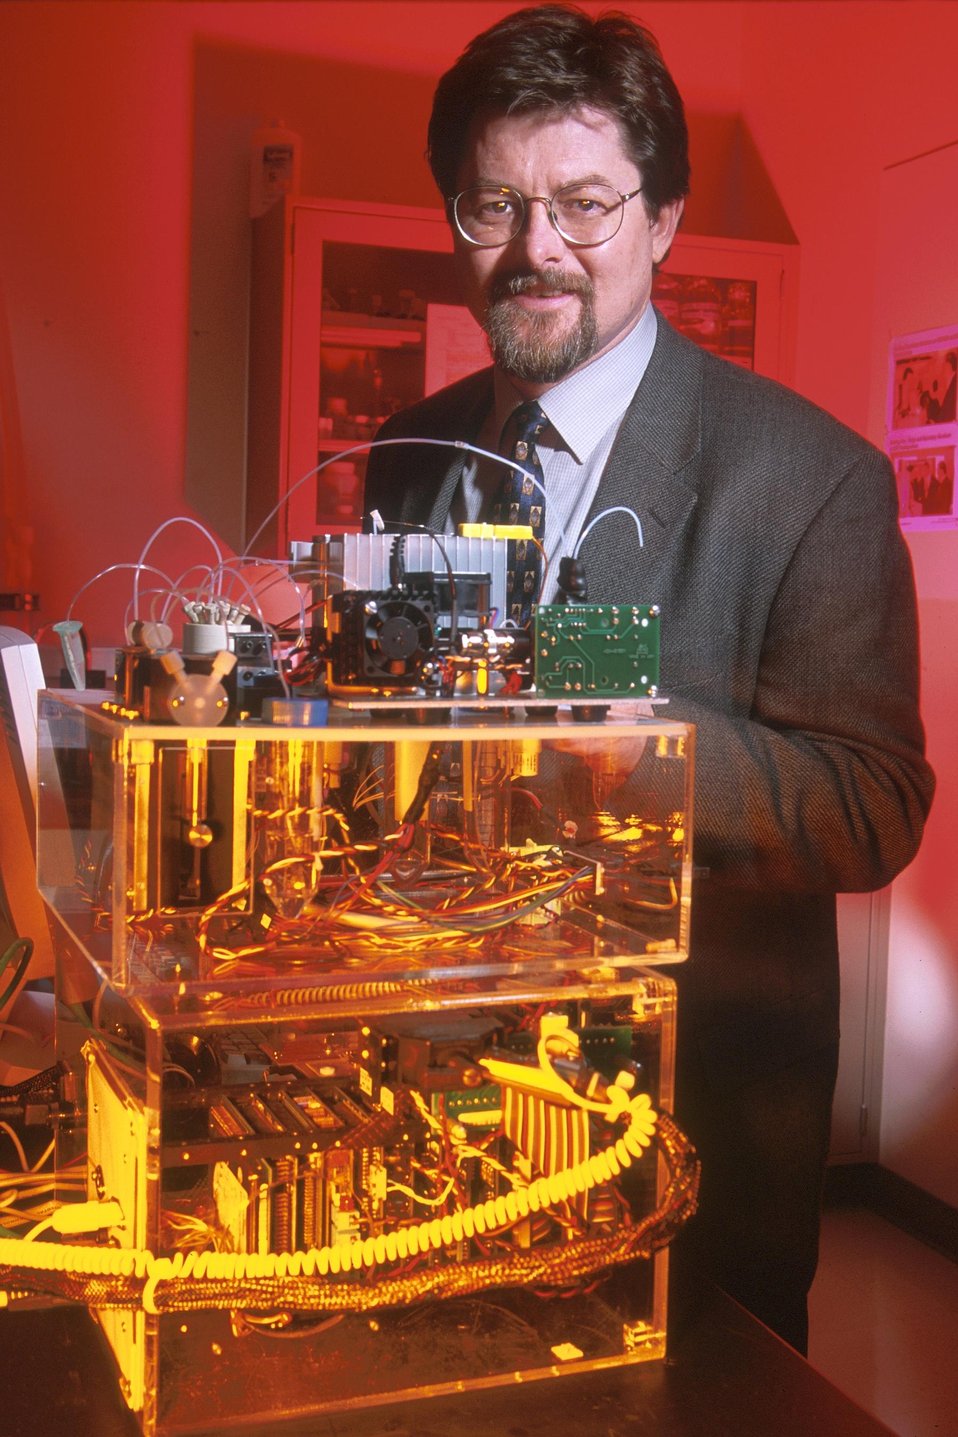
BEADS, OR BIO-DETECTION ENABLING ANALYTE DELIVERY SYSTEM FOR RAPID DETECTION OF BIOLOGICAL THREATS.

BEADS IS A SAMPLE PREPARATION SYSTEM DEVELOPED IN PNNL'S WILLIAM R. WILEY ENVIRONMENTAL MOLECULAR SCIENCES LABORATORY TO CONCENTRATE LARGE VOLUMES OF ENVIRONMENTAL SAMPLES INTO SMALL, CLEAN SAMPLES THAT CAN BE USED IN BIO-DETECTORS TO QUICKLY IDENTIFY PATHOGENS.